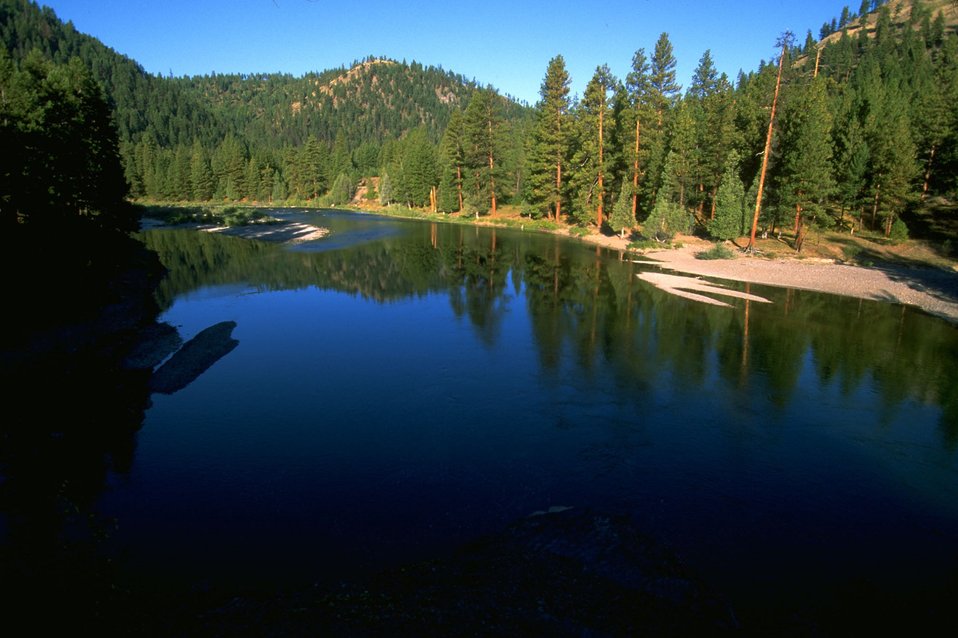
Red Rocks area of Blackfoot River in the early morning